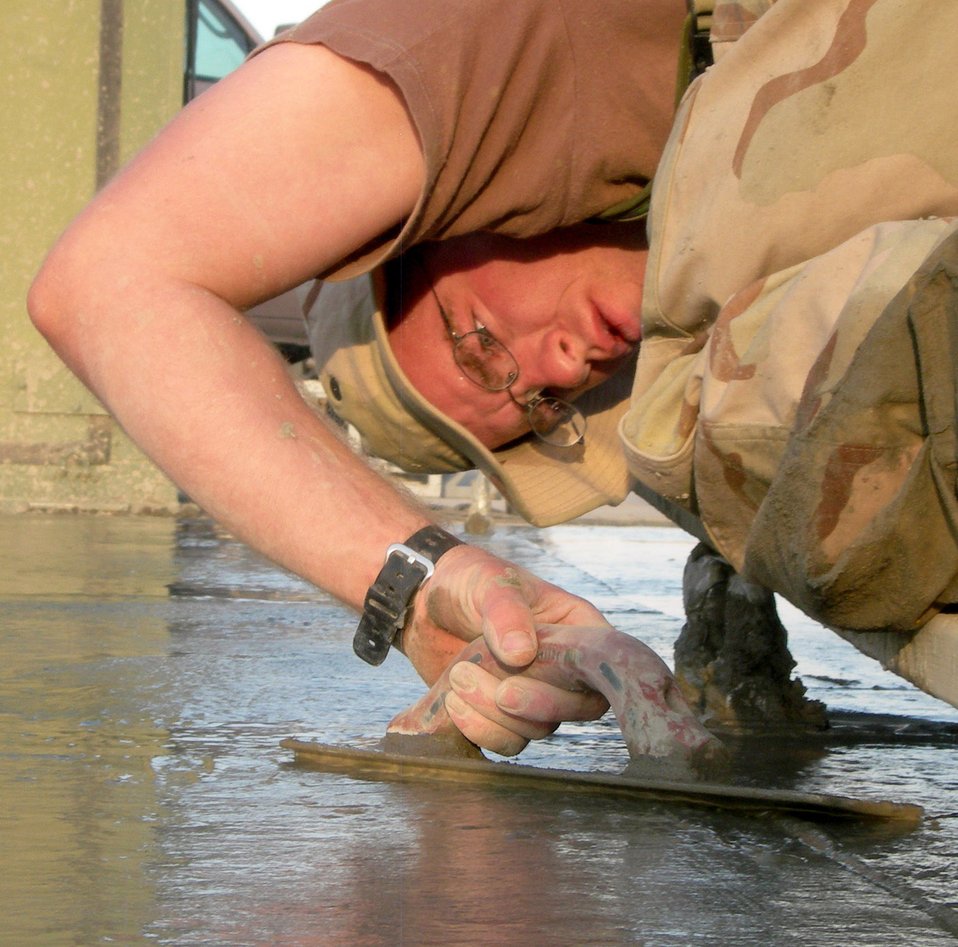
CE keeps mission going

KANDAHAR AIRFIELD, Afghanistan -- Staff Sgt. Jessie Butikofer puts finishing touches on a 450-square-foot